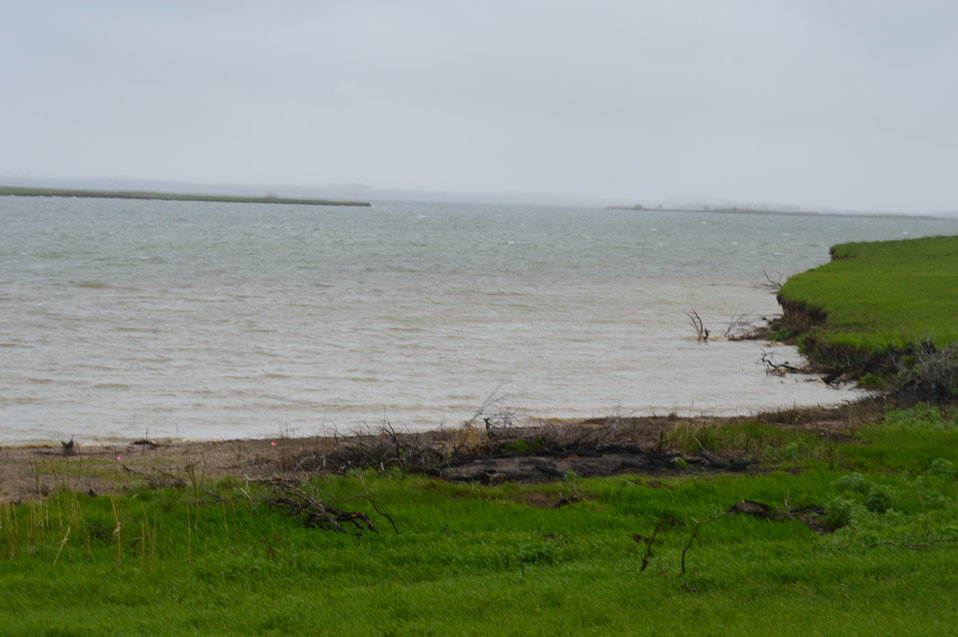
Shoreline of Audubon Lake

Scenery and wildlife and Audubon National Wildlife Refuge in North Dakota.